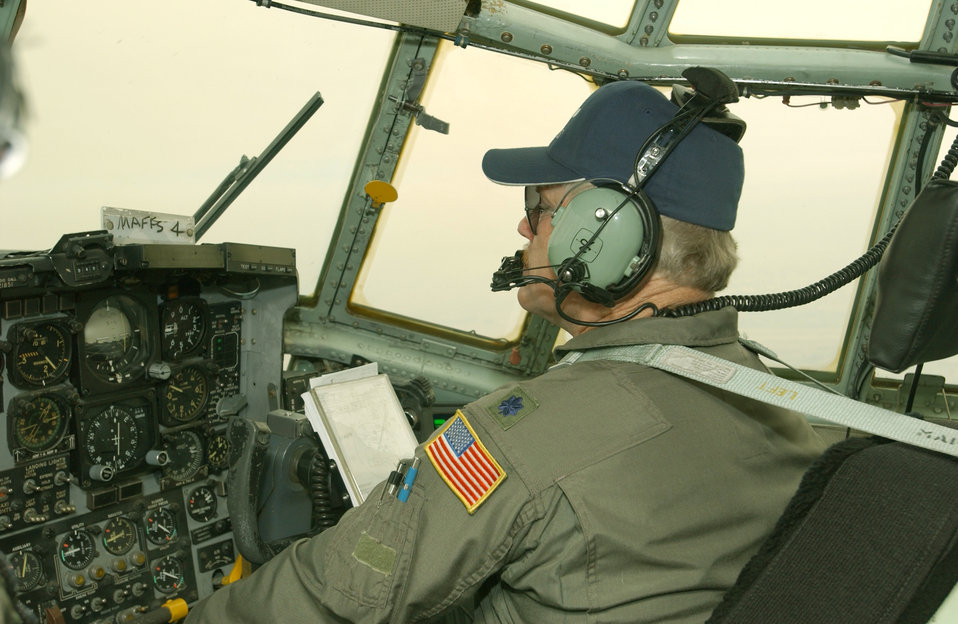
California Fires

CHANNEL ISLANDS AIR NATIONAL GUARD STATION, Calif. -- Lt. Col. Ron Boll, a C-130E Hercules Modular Airborne Fire Fighting System pilot, takes the right seat on a flight during a fire retardant drop on the Simi fire in Southern California on Oct. 28. Pilots flying eight Air Force C-130 Hercules cargo airplanes have dropped 129,600 gallons of retardant on the fire during 48 sorties and 32 flying hours as of Oct. 29.